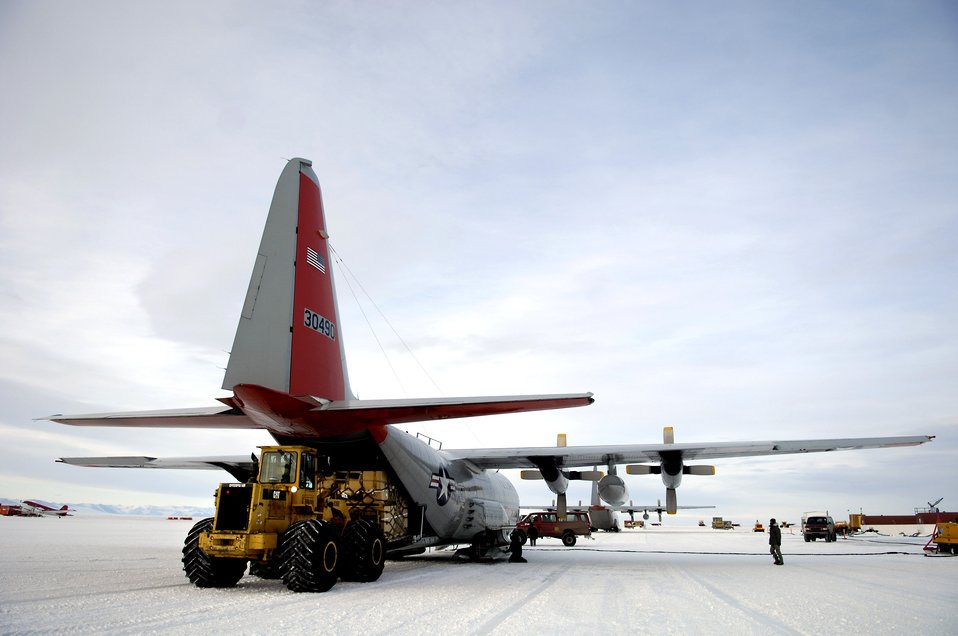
Operation Deep Freeze main season underway

An LC-130 Hercules is unloaded Nov. 27 on the ice runway near McMurdo Station, Antarctica, during Operation Deep Freeze. Ski-equipped LC-130s, crews and support personnel from the New York Air National Guard's 109th Airlift Wing are supporting the 13th Air Force-led Joint Task Force Support Forces Antarctica, Operation Deep Freeze. Operation Deep Freeze is a unique mission that supports the National Science Foundation and U.S. Antarctic Program.